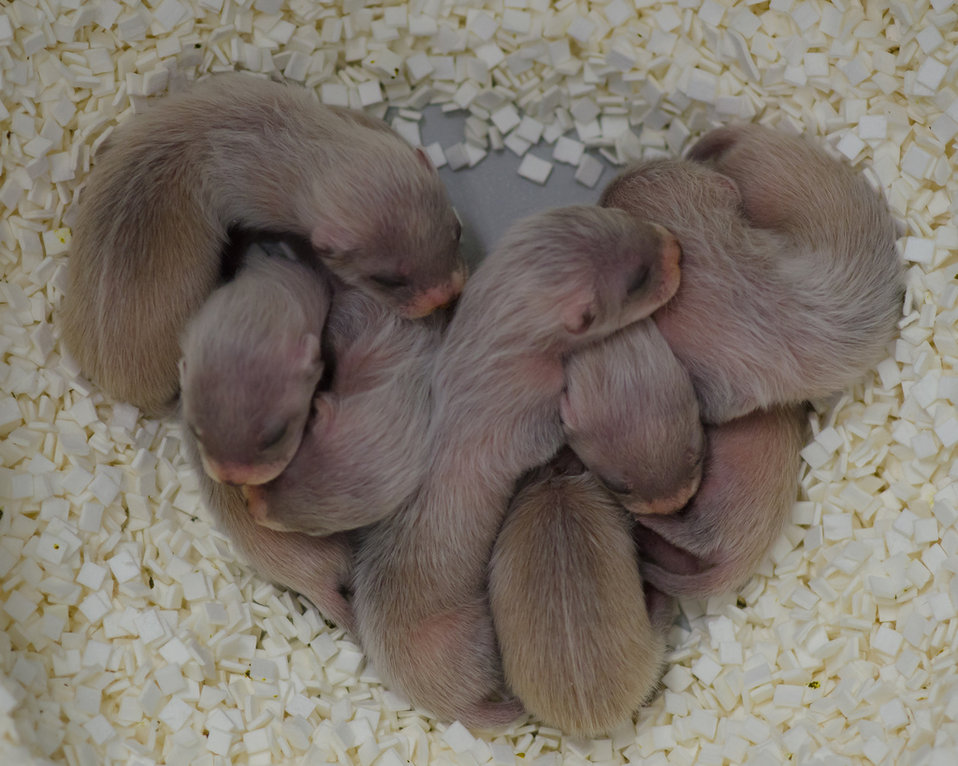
black-footed ferret kits

Week-old black-footed ferret kits born at the National Black-Footed Ferret Conservation Center in WY form a heart shape as they cuddle.
June 9, 2011